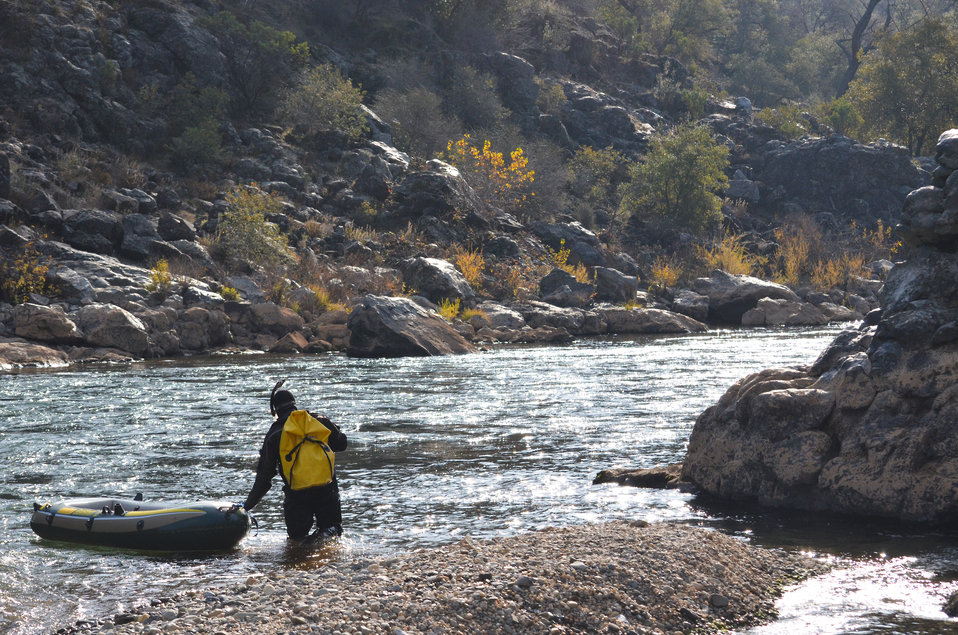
Tracking salmon spawning below Englebright Dam

Pacific States Marine Fisheries Commission biologist Casey Campos looks for evidence of salmon spawning in the Yuba River below Englebright Dam near Smartsville, Calif., Dec. 12, 2011. Under the direction of the National Marine Fisheries Service, the U.S. Army Corps of Engineers Sacramento District, which owns and manages the dam, has placed more than 5,000 tons of gravel in the river to improve spawning habitat for the threatened Chinook salmon and steelhead trout species. The PSMFC is charged with tracking spawning activity related to the new gravel.